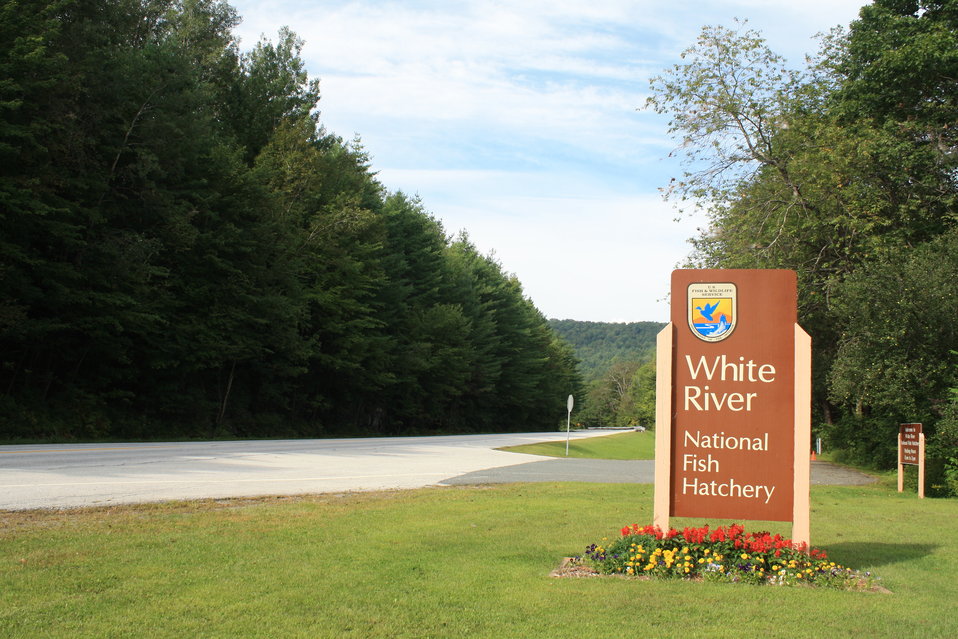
White River National Fish Hatchery entrance

Entrance to White River National Fish Hatchery